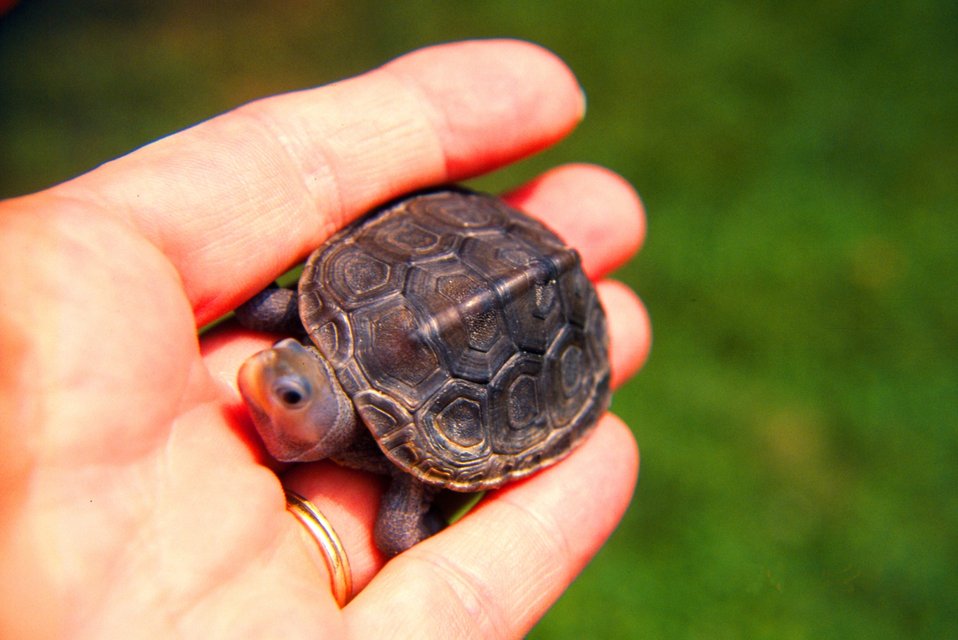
Baby diamondback terrapin, Malachlenys terrapin.